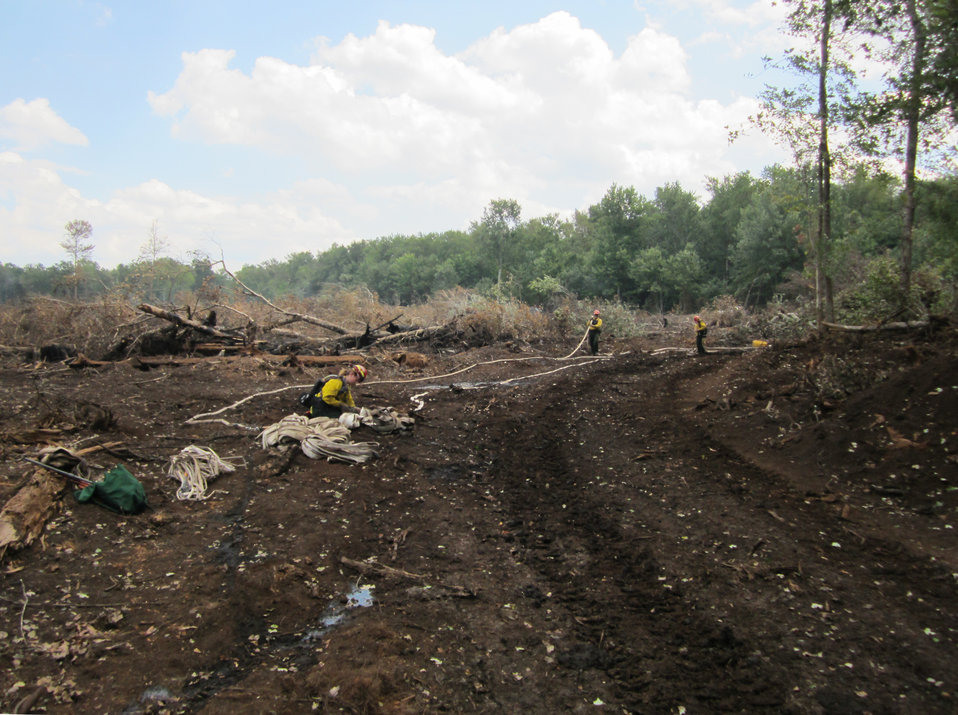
Firefighters and hose

Suffolk, VA, August 2011: Thousands of feet of fire hose was used to transport water on the Lateral West Fire burning on Great Dismal Swamp National Wildlife Refuge.